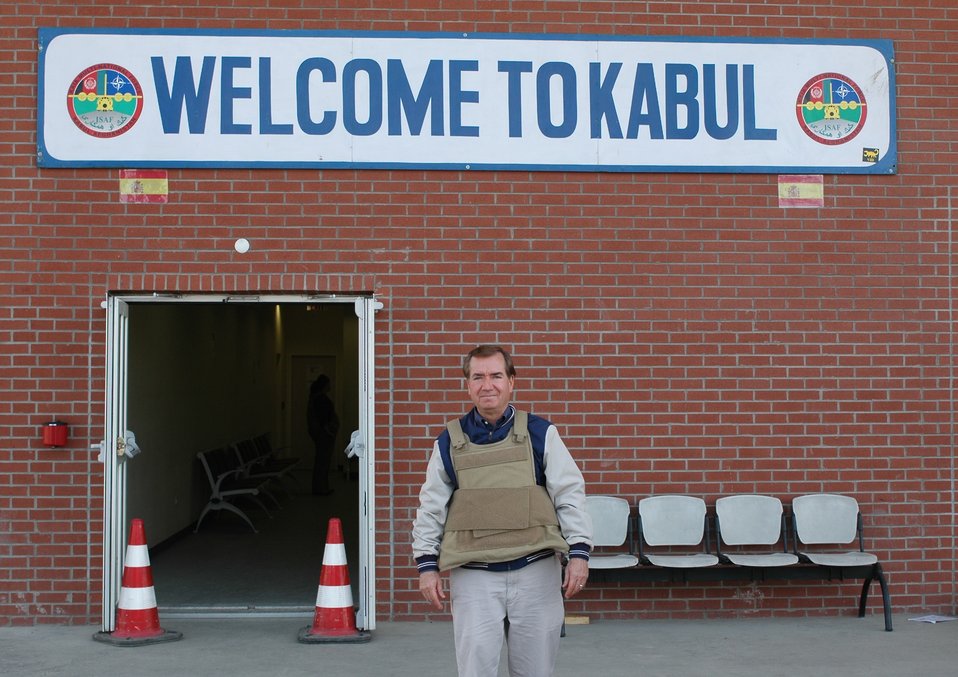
CODEL Berman